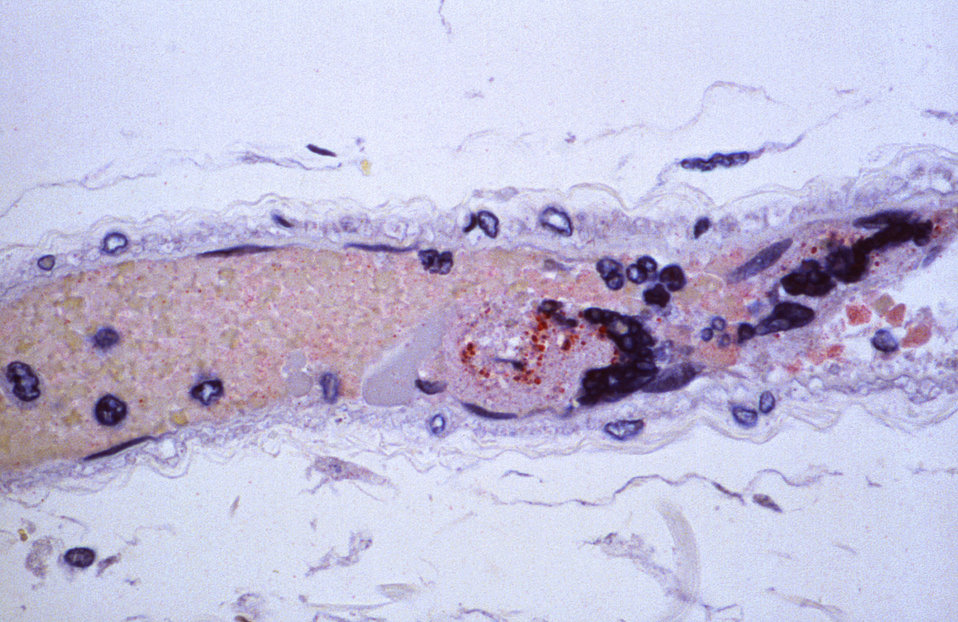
Using immunohistochemical (IHC) technique, this photomicrograph revealed some of the cytoarchitectural histopathologic changes associated with a Nipah virus infection, in this case affecting a human patient, resulting in the formation of a syncytial cell, i.e., giant, multinucleated endothelial cell, in the center of the image.